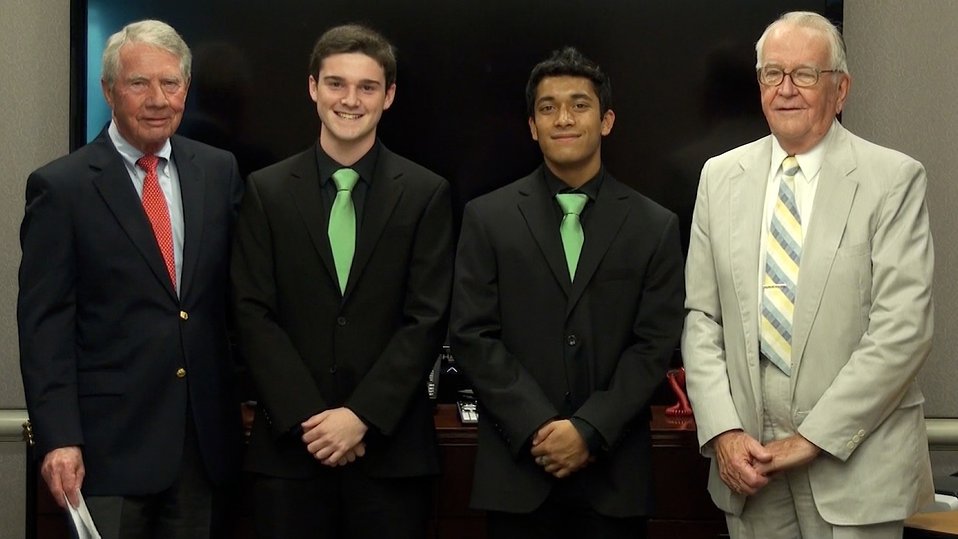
130813-NIDA-Payne and Moonis

Friends of NIDA’s Charles O’Keefe (L) and Bill Dewey (R,) gives award to Emory Morris Payne and Zohaib Majaz Moonis, (2nd Place Winners.)